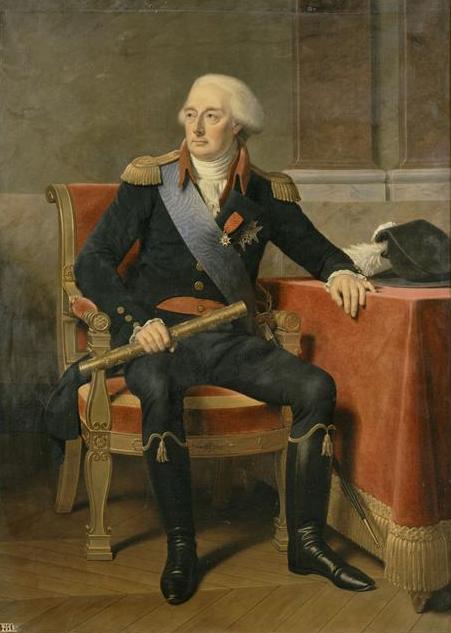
Louis Joseph de Bourbon, prince de Condé